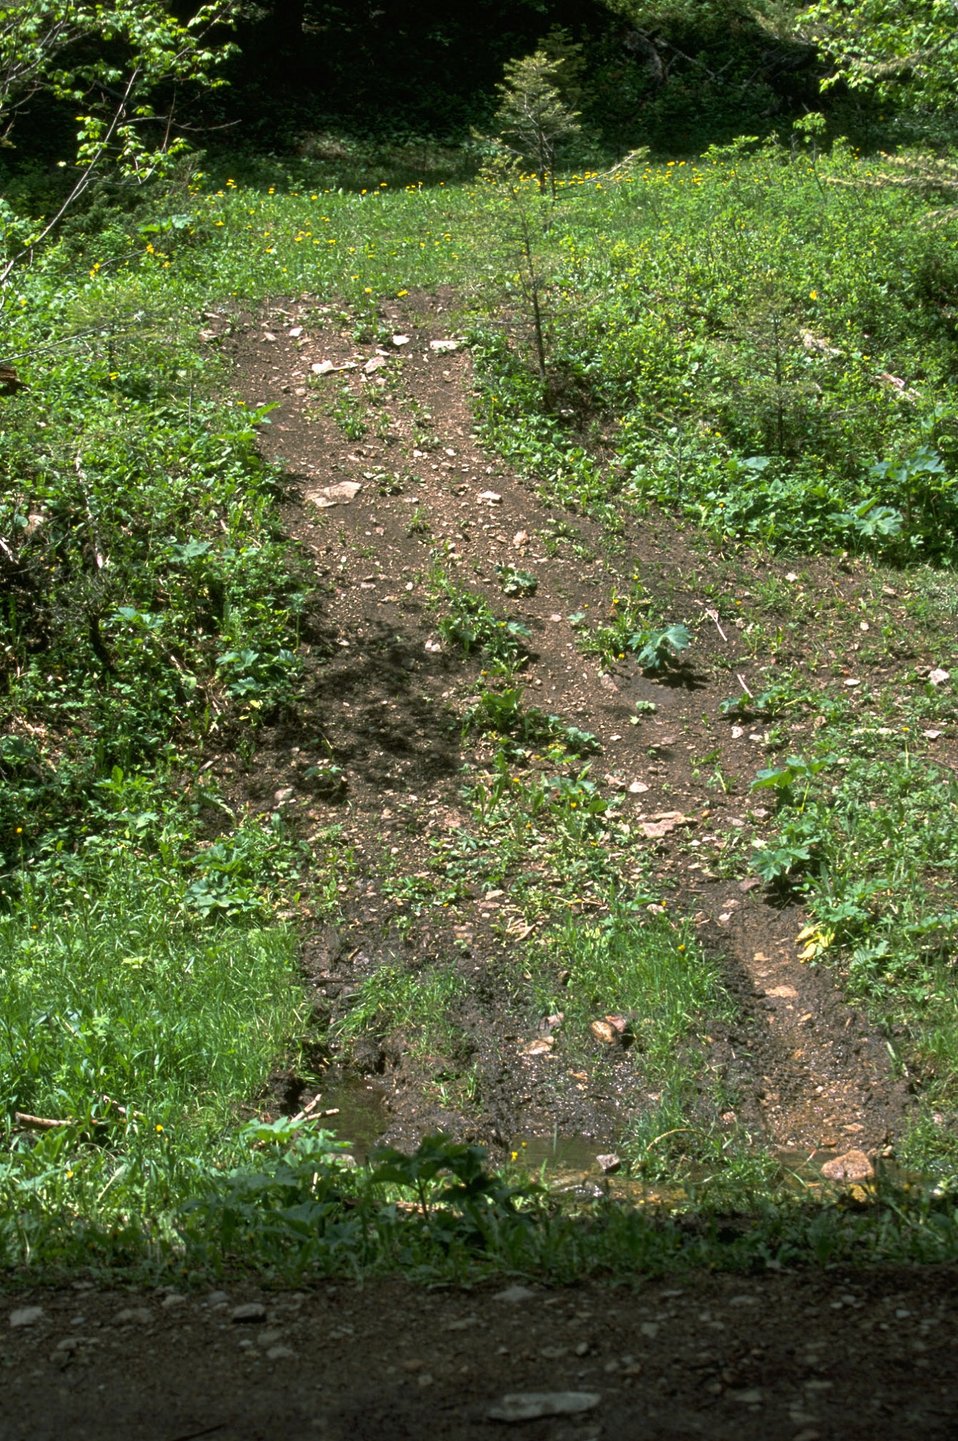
Off-Highway Vehicle (OHV) road damage in the LimeKiln Canyon area